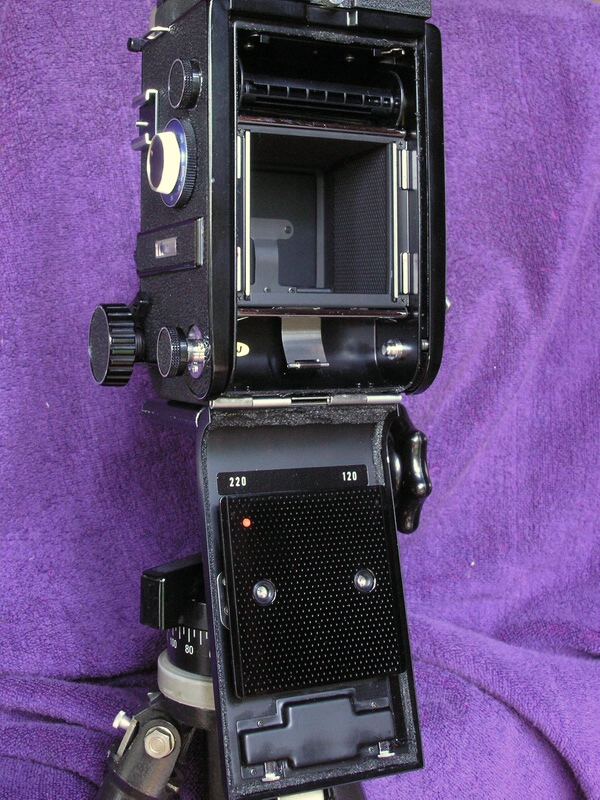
DANYvanvee